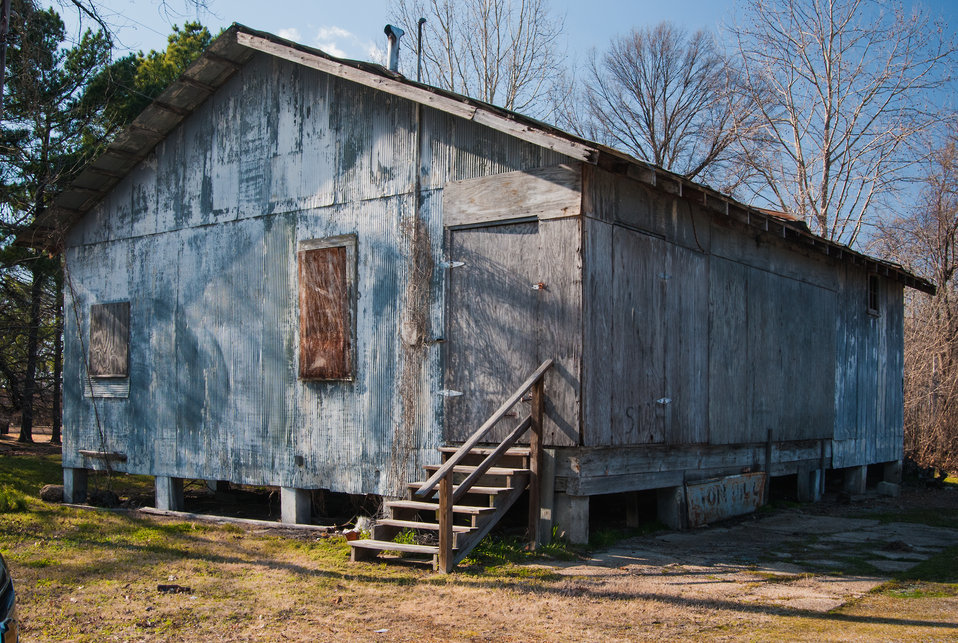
A house sits vacant in Forest City, AR on Mar. 5, 2013. The East Arkansas Enterprise Community, Inc. in Forrest City, AR is one of 42 community-based organizations located in high poverty areas in the U.S. to benefit from the Arkansas Delta Seeds of Change (ADSOC) Initiative. The U.S. Department of Agriculture (USDA) in partnership with Heifer International (an International organization whose mission is to work with communities to end hunger and poverty and care for the Earth) and various for-profit and non-profit organizations have put in motion the “Seeds of Change Implementation Plan” to use sustainable agriculture to build food systems in the Arkansas Delta. The program has evolved into the ADSOC Initiative.